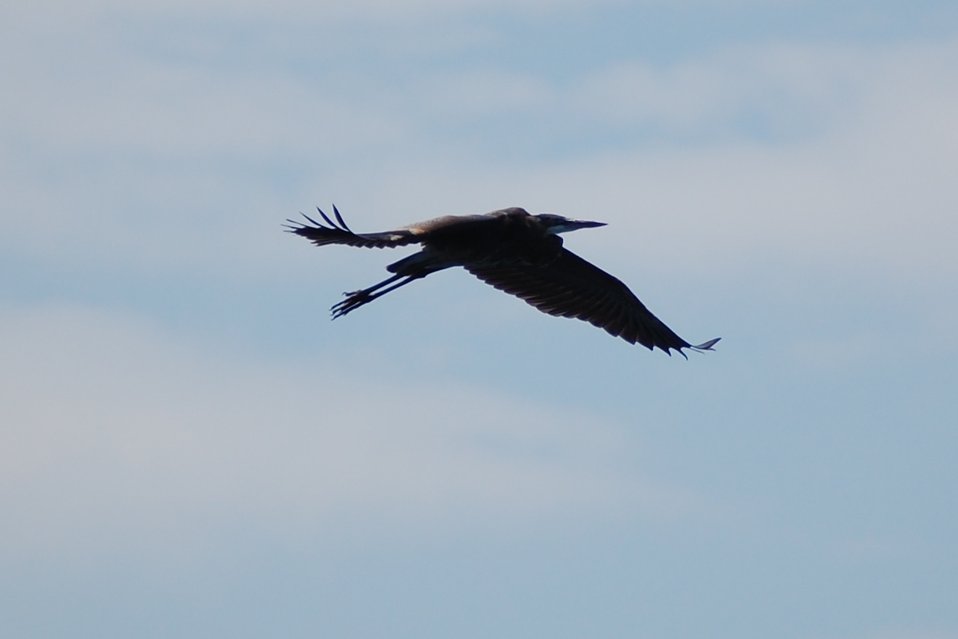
Blue heron in flight